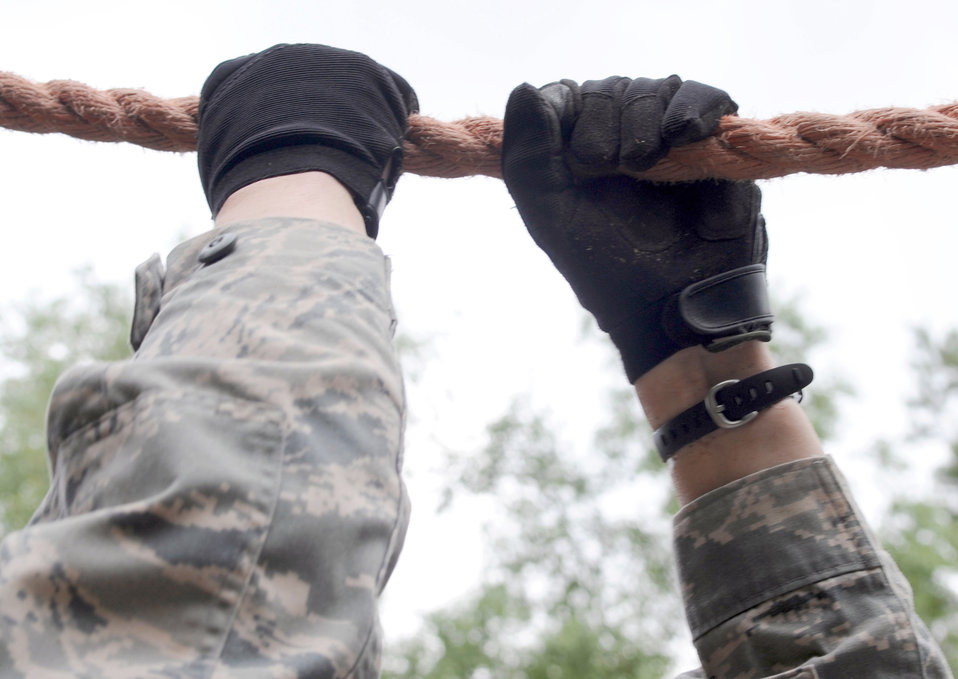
Exercise Allied Strike 10

An Airman tackles an obstacle July 23, 2010 during Exercise Allied Strike 10, at the U.S. Army's training area in Grafenwoehr, Germany.